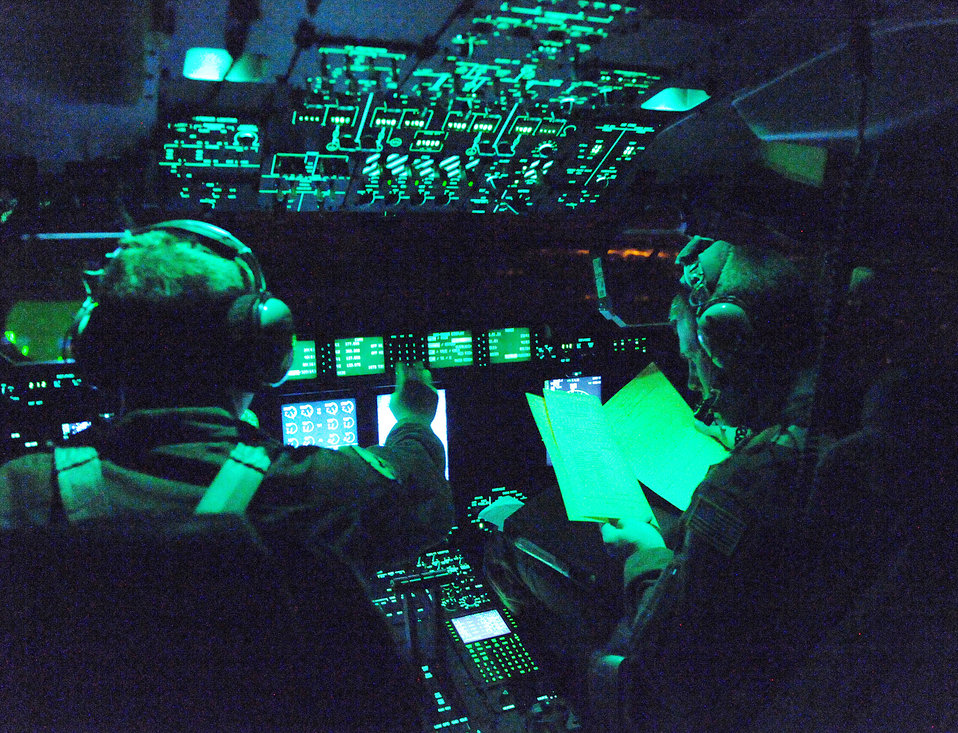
Little Rock AFB crew gets supplies on ground

Capt. Jeff Smith, 41st Airlift Squadron aircraft commander (left) and Capt. Andy Marshal, 41st AS co-pilot, prepare to land their C-130J Super Hercules Jan. 14, 2010, at the Biloxi-Gulfport International Airport, Miss., to pick up equipment and personnel bound for Haiti.